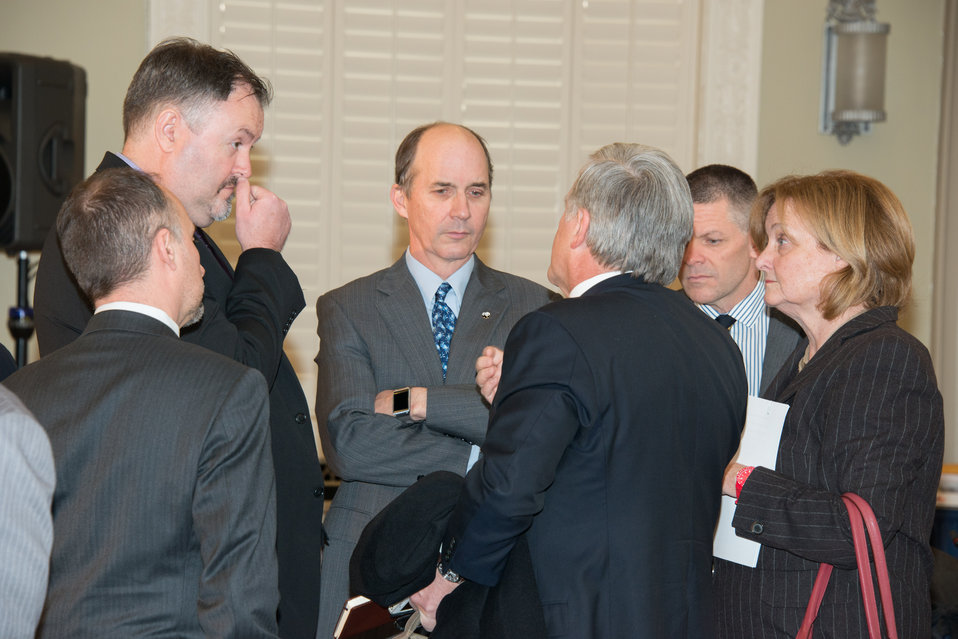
Public Meeting of Advisory Council on Wildlife Trafficking

Members of the Advisory Council on Wildlife Trafficking meet prior to the start of the public meeting